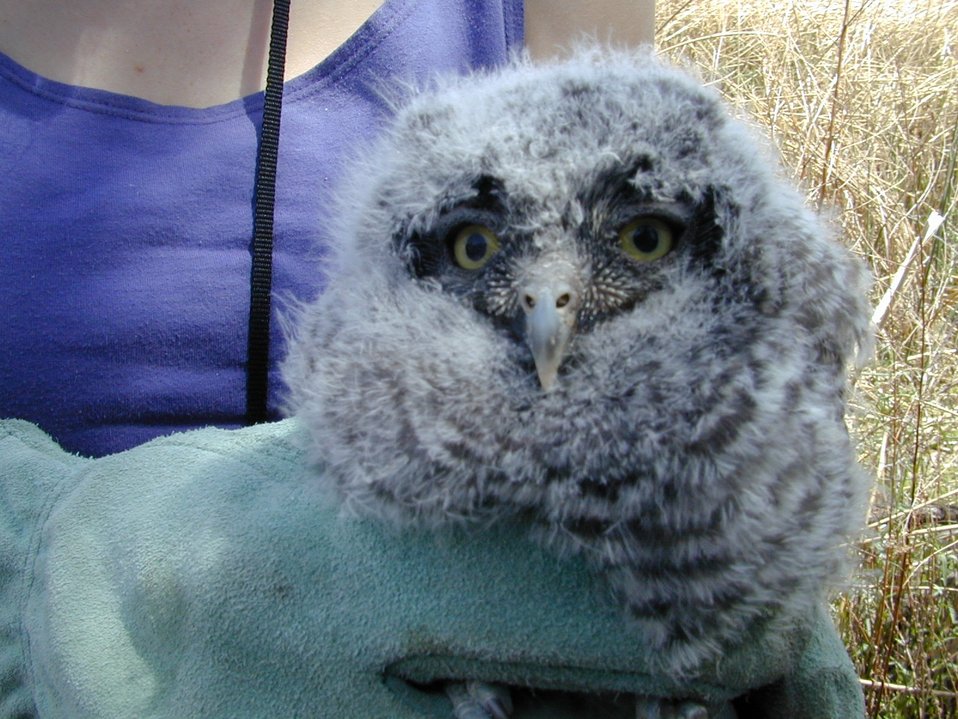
Environmental Education Fire Workshop Timberline High School Fall 2000